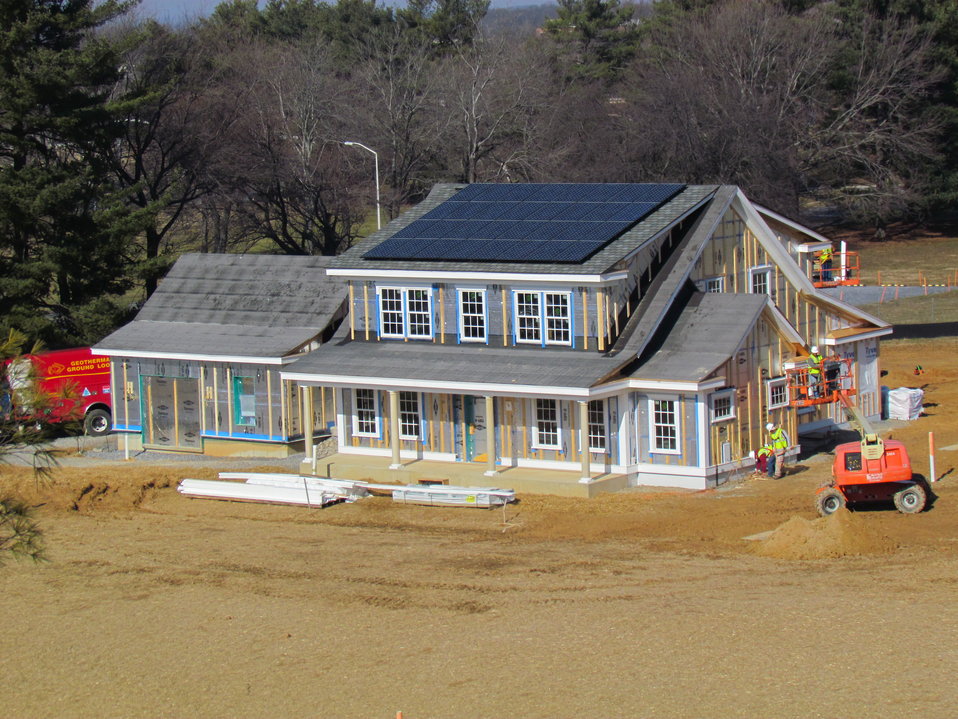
Net-Zero Energy Residential Test Facility – Aerial picture showing south side of NZERTF. Workman installing exterior trim on facility.